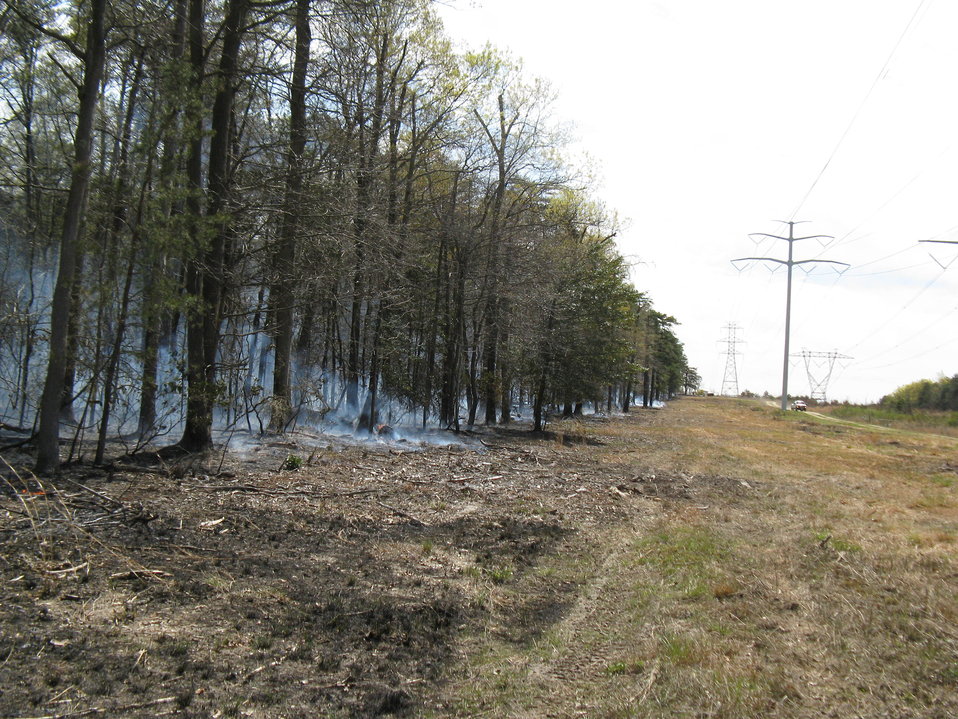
Western Boundary

Laurel, Maryland, April 5, 2012: Lingering smoke smolders from a controlled burn and blows away from a powerline along the burn boundary. The burn was done at Patuxent Research Refuge's Savannah Restoration Unit to increase refuge species and habitat diversity. Specifically, the refuge hoped to increase density and diversity of rare darkling beetles and forest floor plants.